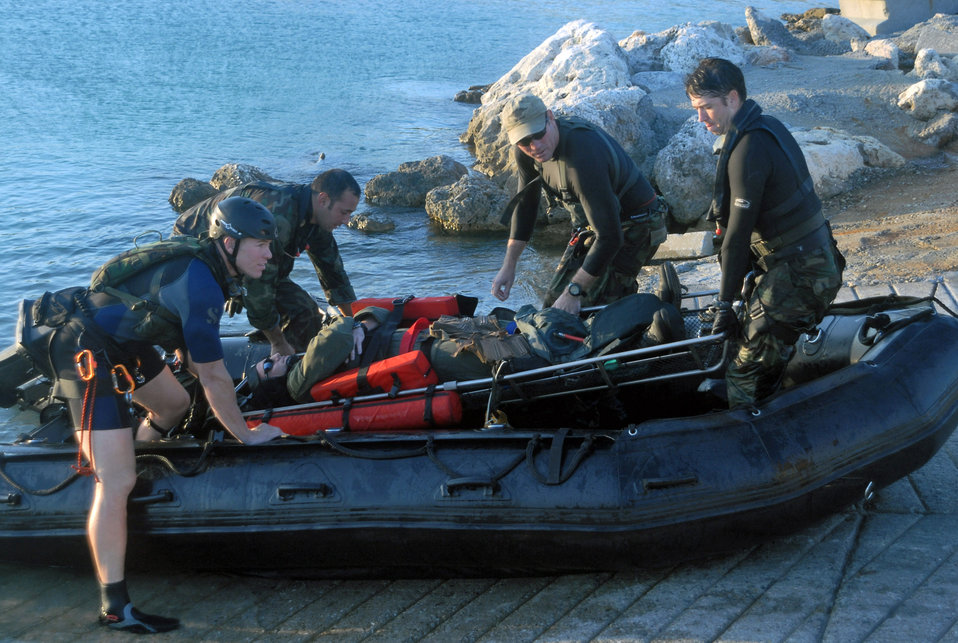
Trouble afloat

Members of the 31st Rescue Squadron prepare to transport Capt. Derek Flynn to medical facilities at Kadena Air Base, Japan, after pulling him out of the waters off the coast of Okinawa Oct. 24. Captain Flynn of the 67th Fighter Squadron was placed in the water as part of a Kadena AB survival, evasion, resistance and escape exercise.